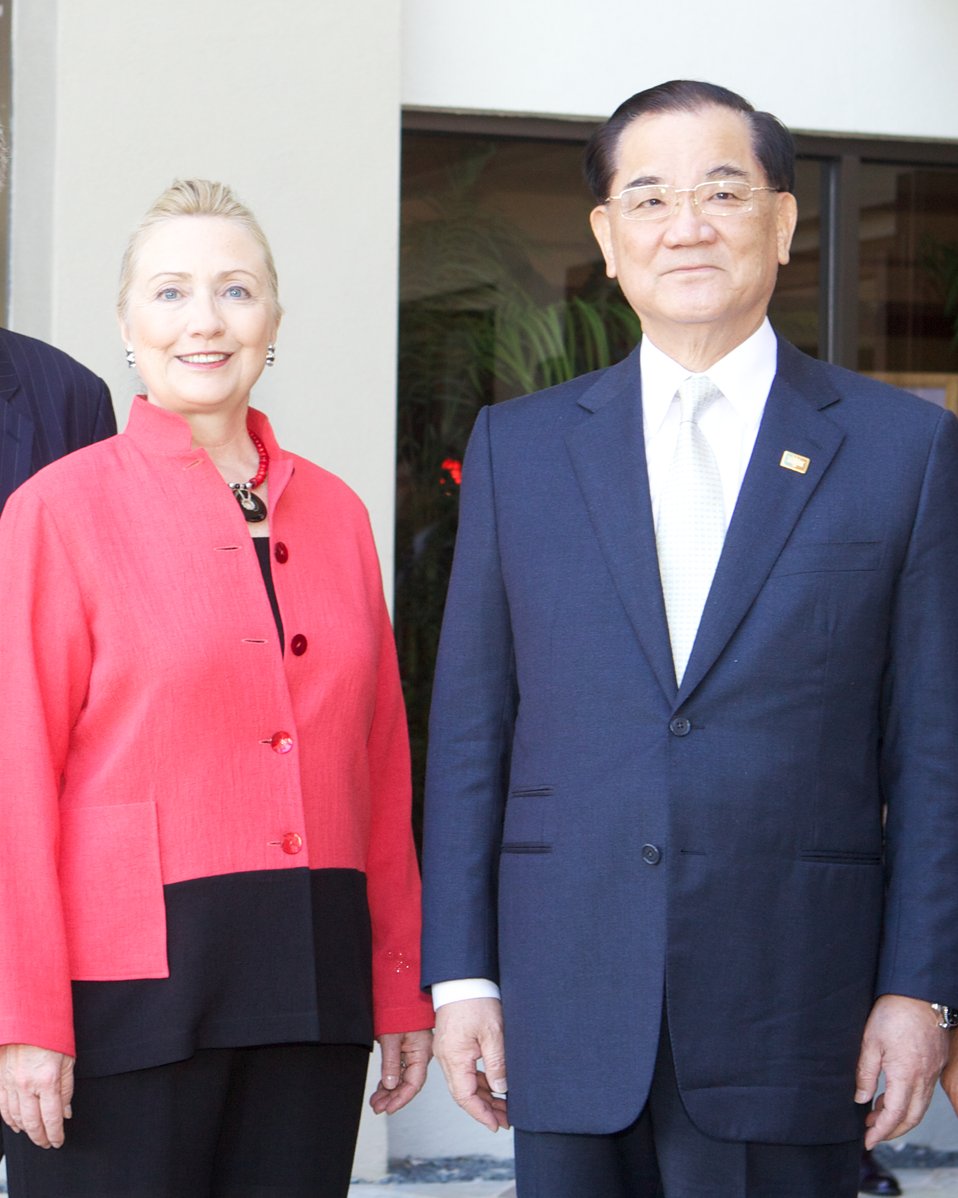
Secretary Clinton Meets With Leader's Representative of Chinese Taipai

U.S. Secretary of State Hillary Rodham Clinton meets with Leader's Representative of Chinese Taipai Dr. Lien Chan on the sidelines of APEC in Honolulu, Hawaii, on November 12, 2011.